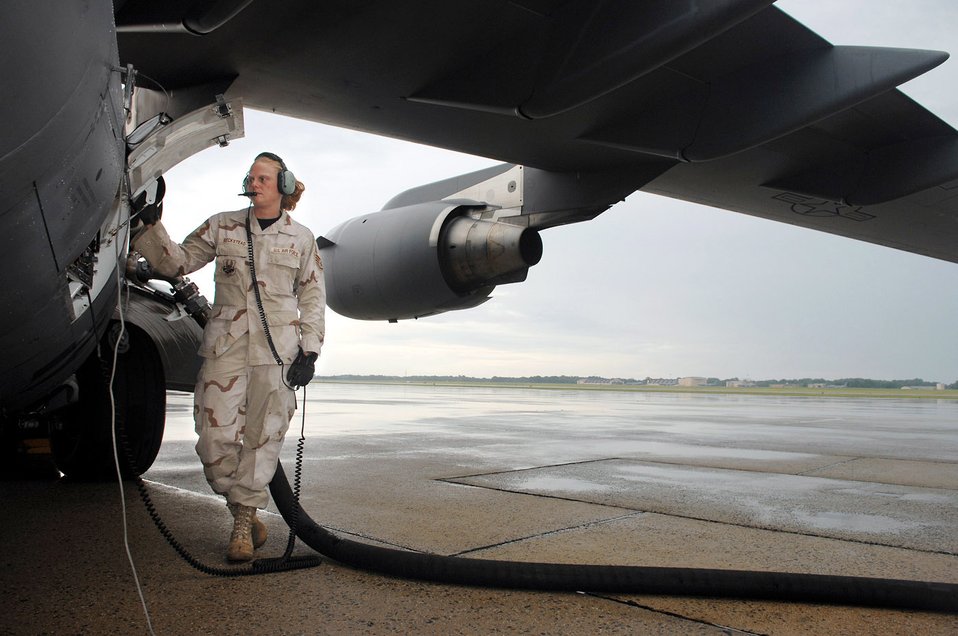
Airpower Summary for July 17, 2007

Staff Sgt. Angie Beckstead refuels a C-17 Globemaster III aircraft at Andrews Air Force Base, Md., June 12, 2007. Coalition C-17s and C-130s provide airlift throughout the area of responsibility. The aircraft moved 1,556 people and over 400 tons of supplies July 17. Sergeant Beckstead is a crew chief from the 452nd Maintenance Squadron.